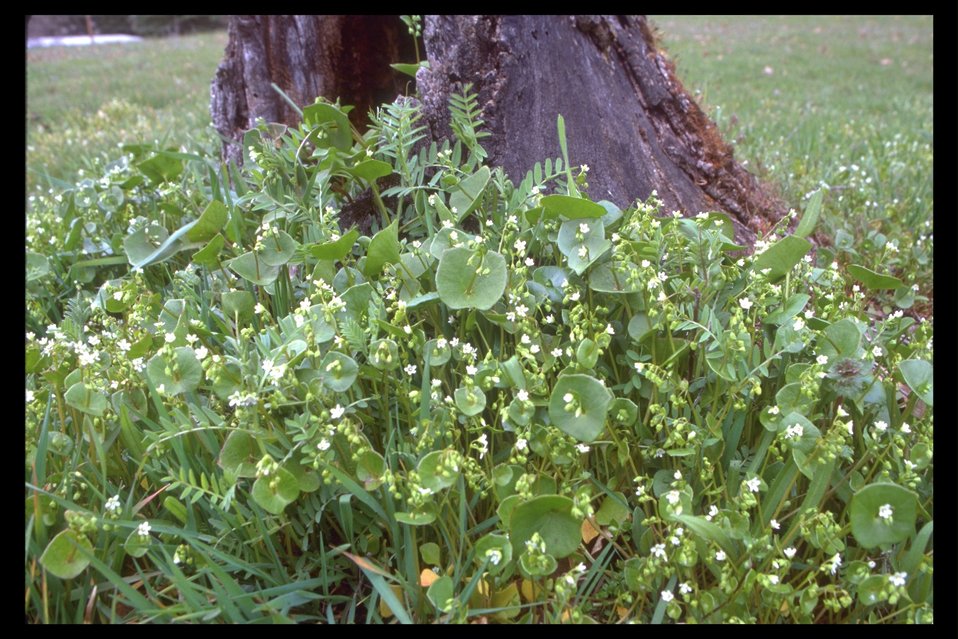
Miner's Lettuce (Claytonia perfoliata) in Holmes Park, Medford.